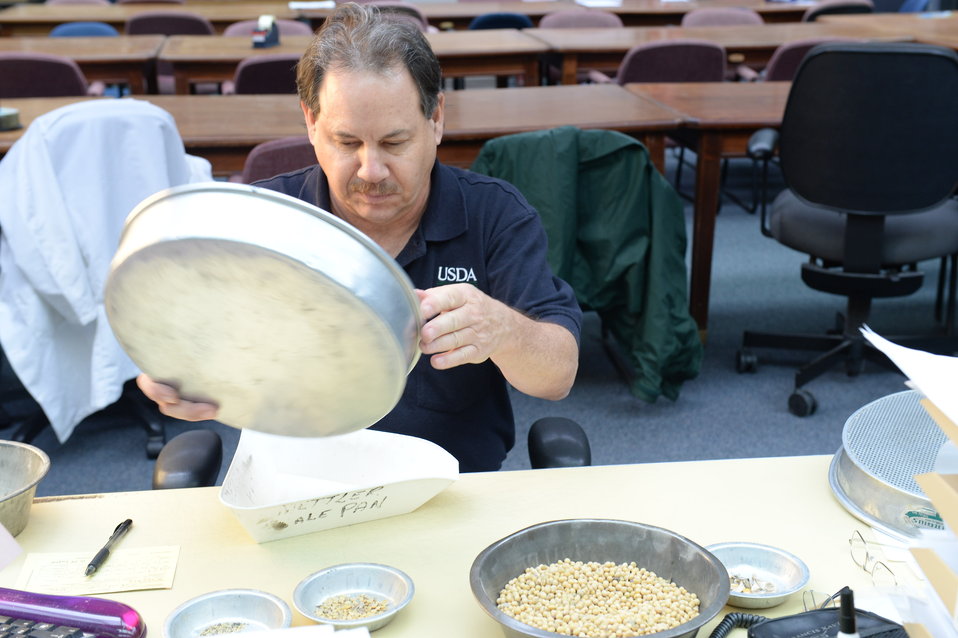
U.S. Department of Agriculture (USDA) Grain Inspection, Packers and Stockyards Administration (GIPSA) Federal Grain Inspection Service (FGIS) employee examines grain samples at the FGIS inspection laboratory in New Orleans, LA on Monday, Nov. 18, 2013.